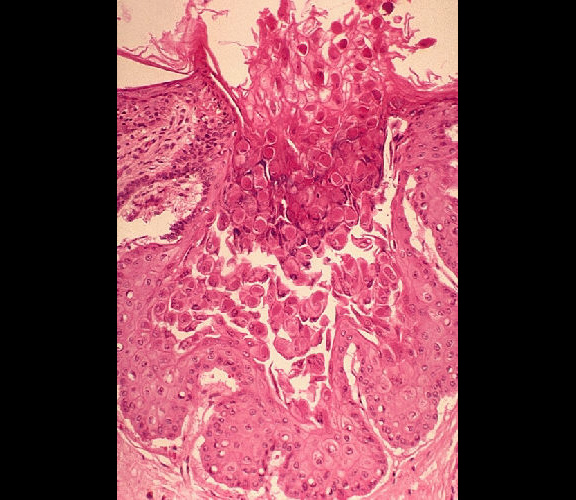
Histopathology of molluscum contagiosum, skin.